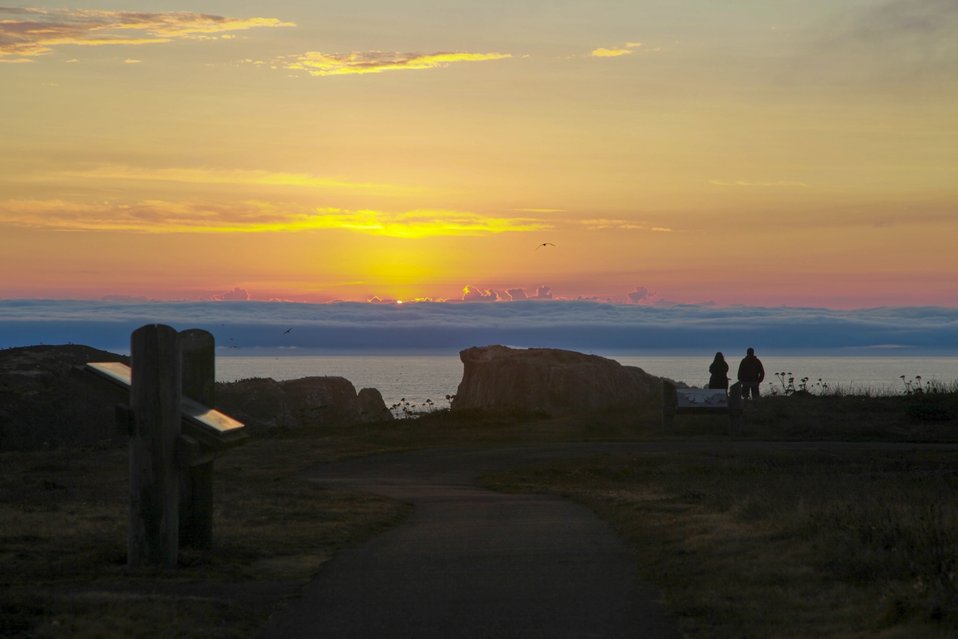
Coquille Point sunset, Oregon Islands NWR

Sunset paints the Coquille Point unit of Oregon Islands National Wildlife Refuge.